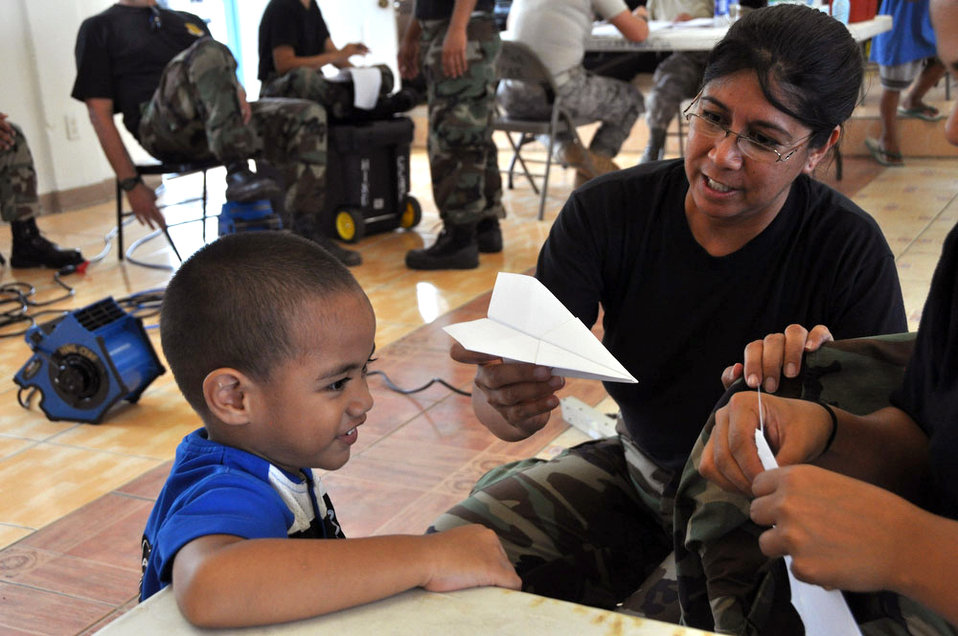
Hawaii Guard medical team returns, civil support team stays in American Samoa

Tech. Sgt. Lisa Bartolome shows a young American Samoan boy how to make a paper airplane Oct. 2, 2009, at the Congressional Christian Church in the Fafatiua village of American Samoa. Hawaii Air National Guard members provided basic medical care to residents after a tsunami struck the island Sept. 29, 2009. The church, with the help of the government, is serving three meals a day to those that are in need. Sergeant Bartolome is assigned to the Hawaii Air National Guard's 154th Medical Group.